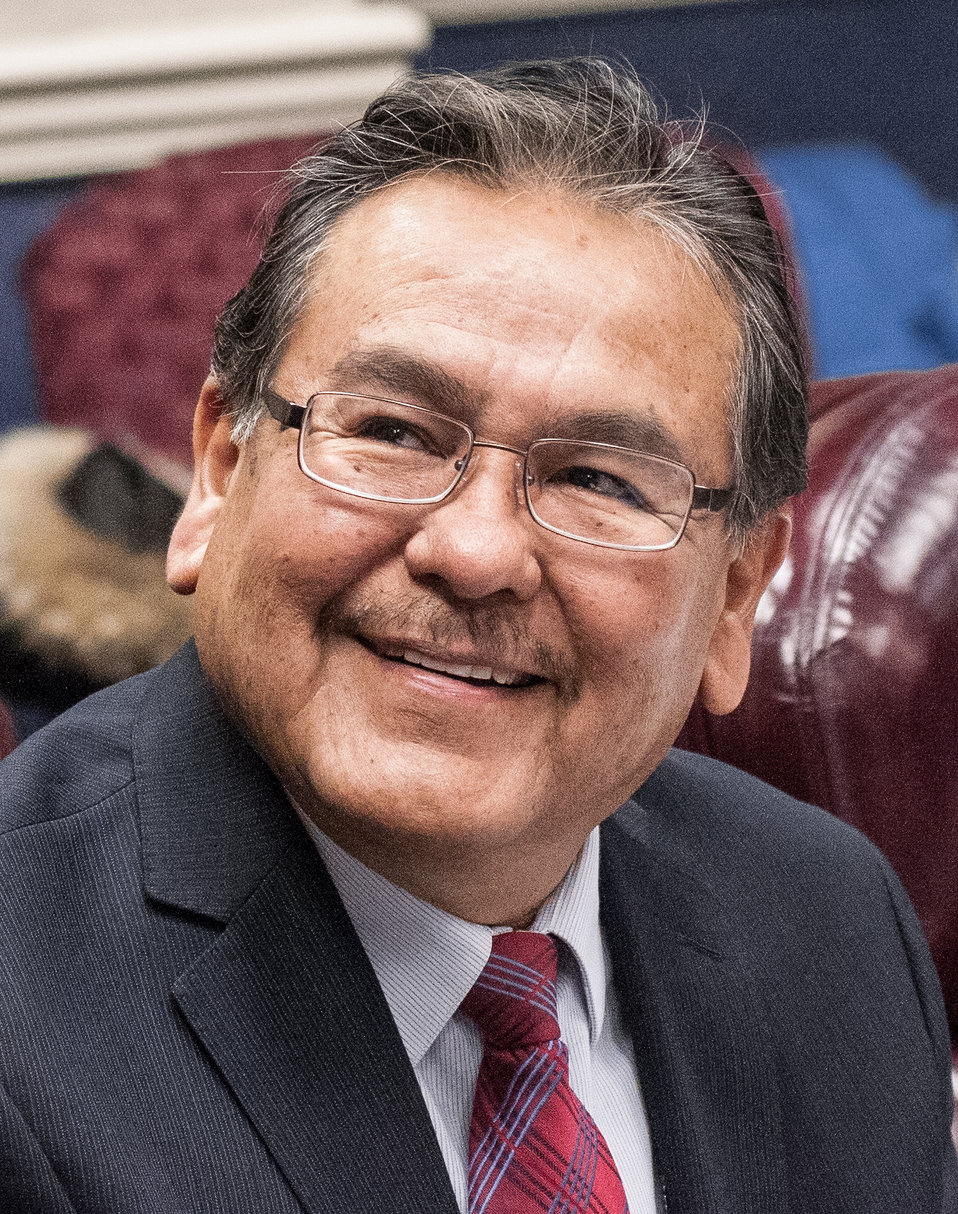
Navajo Technical College President Elmer Guy, Crownpoint, NM, introduces himself at the beginning of the USDA and American Indian Higher Education Consortium Leadership Group Winter Meeting, at the USDA Whitten Building, Williamsburg Room, in Washington D.C., on Friday, Feb. 8, 2013.